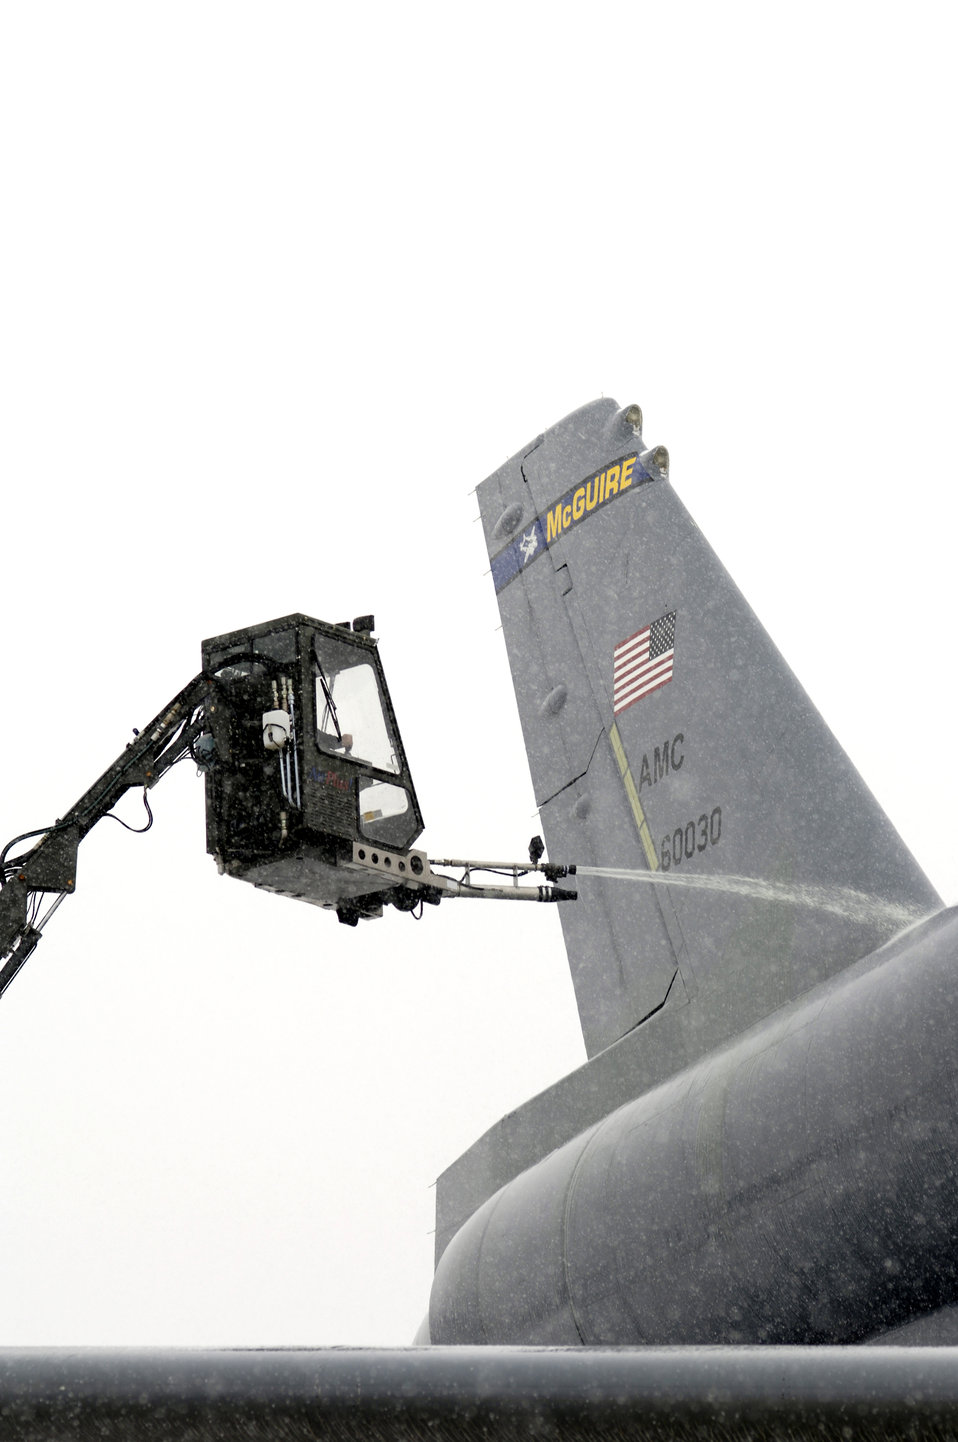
De-ice is nice

A KC-10A Extender is deiced March 7 by a member of the 605th Aircraft Maintenance Squadron at McGuire Air Force Base, N.J. during a snow storm that hit the base.